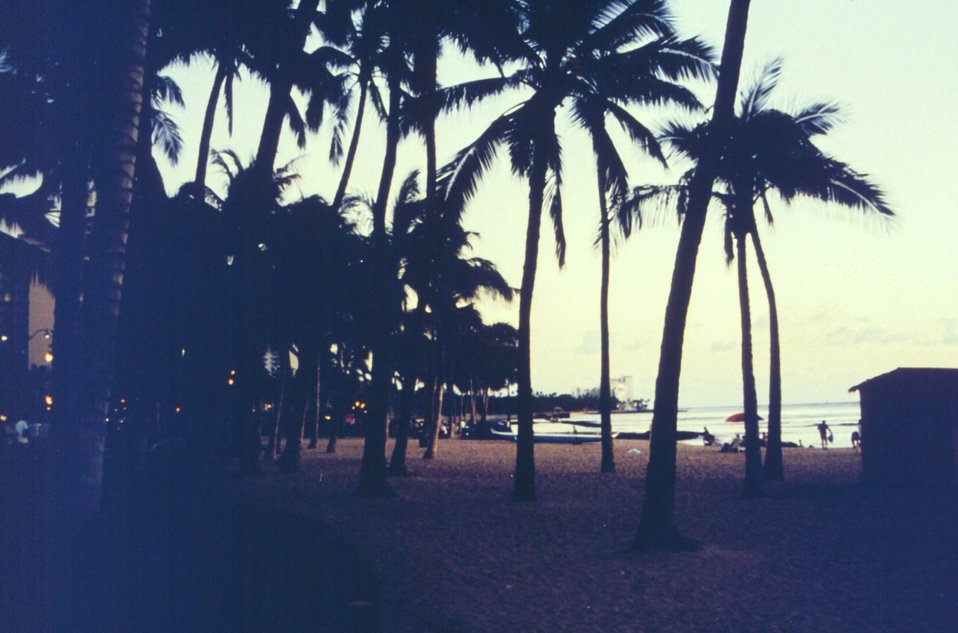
Palm trees along Waikiki Beach.